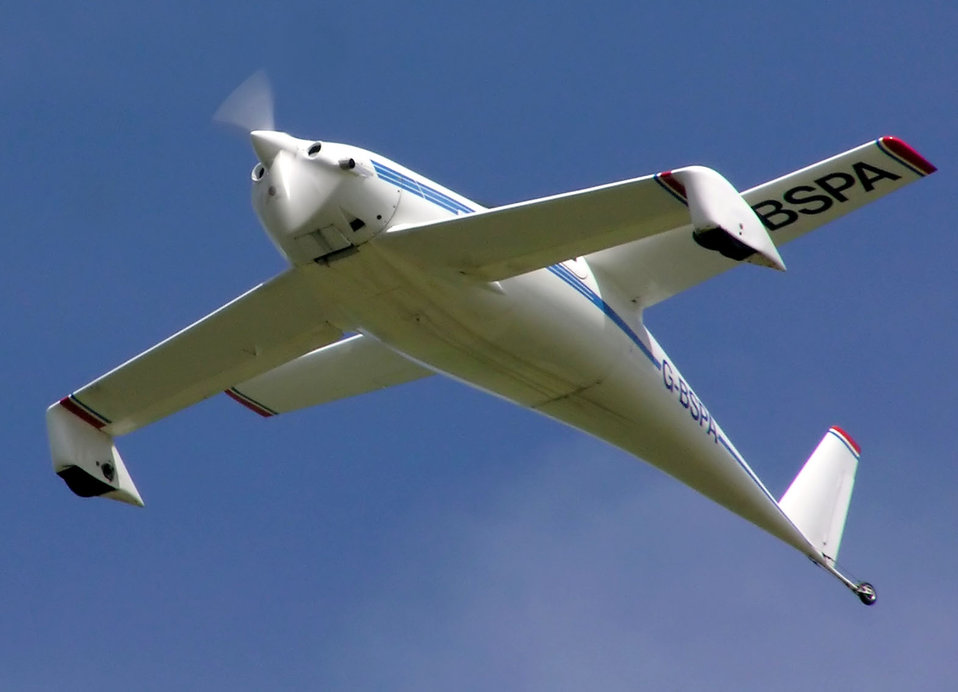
Qac.quickie.q2.g-bspa.flying.arp